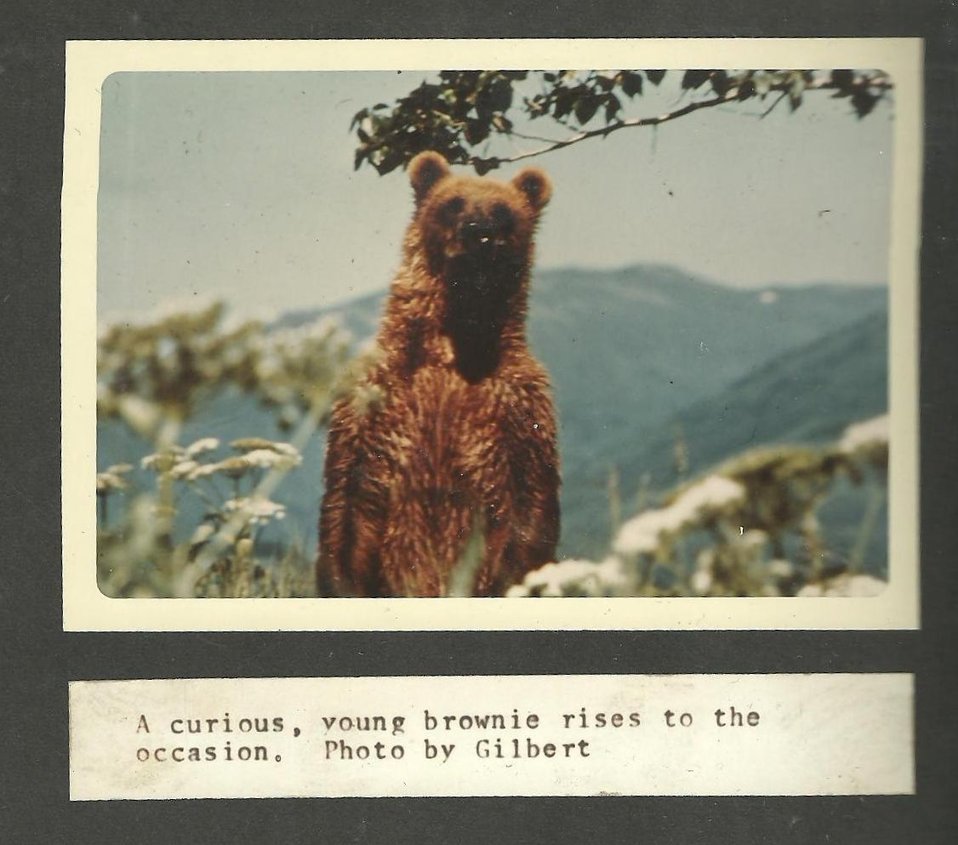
(1967) Rising to the Occasion

Credit: USFWS

Source and Contact: Kodiak National Wildlife Refuge